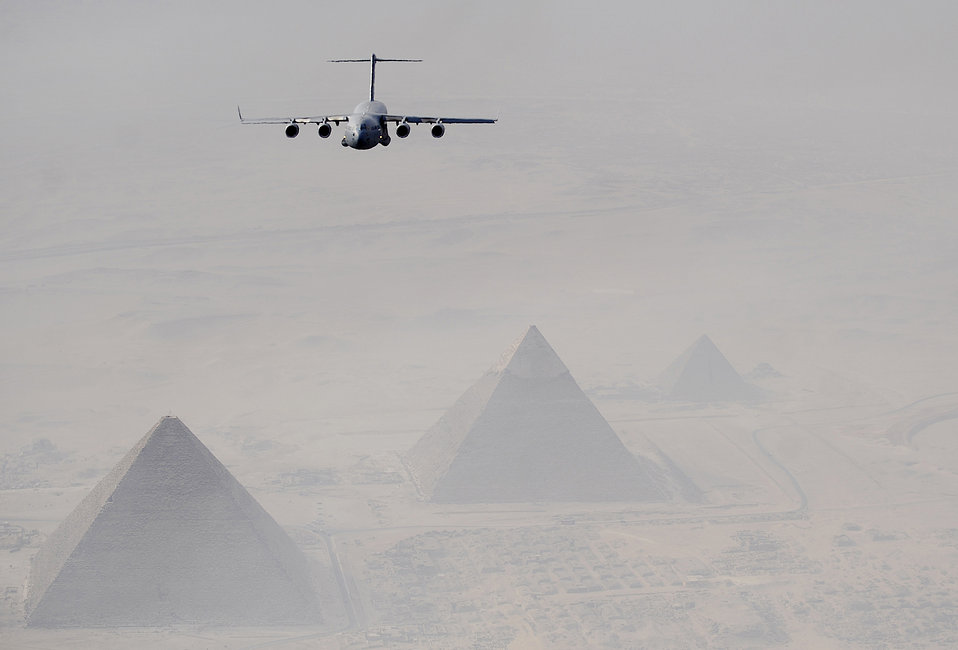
Pyramid power

A C-17 Globemaster III flies over the Pyramids of Giza Oct. 15, 2009, during Exercise Bright Star. Bright Star is a joint international military airdrop exercise that strengthens and enhances the cohesiveness of each country's participating forces. The C-17 crew is from the 437th Airlift Wing at Charleston Air Force Base, S.C.